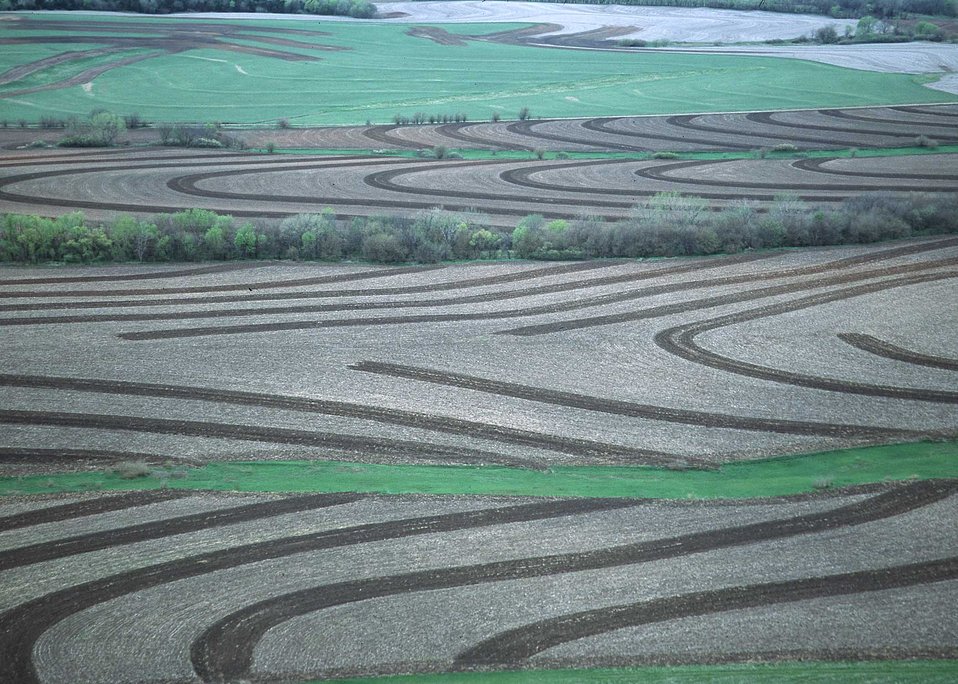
Aerial view on contour terraces and grassed waterways for erosion control. Kansas.